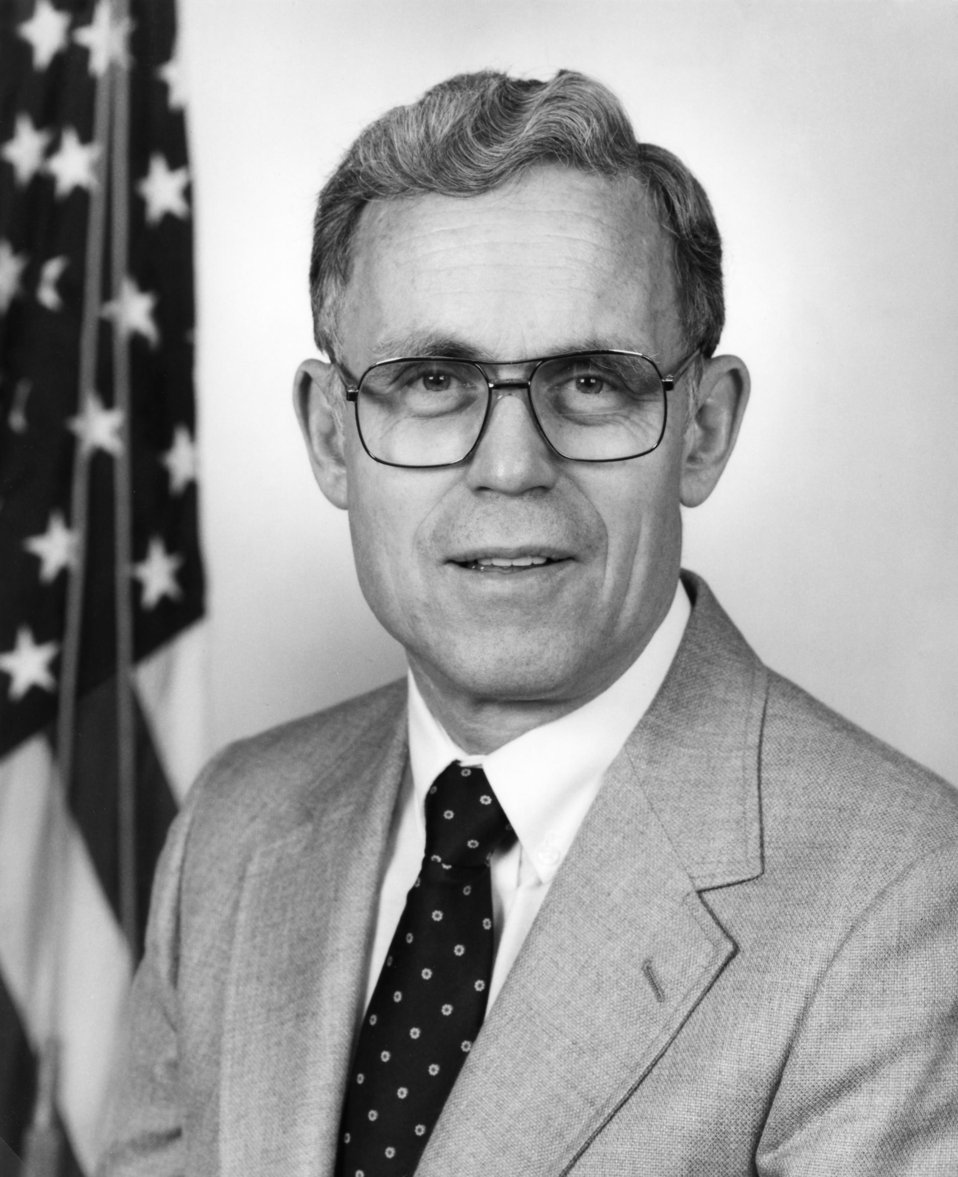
This was a photographic portrait of James O. Mason, M.D., M.P.H., a former Director of the Centers for Disease Control and Prevention (CDC) from 1983 - 1989.